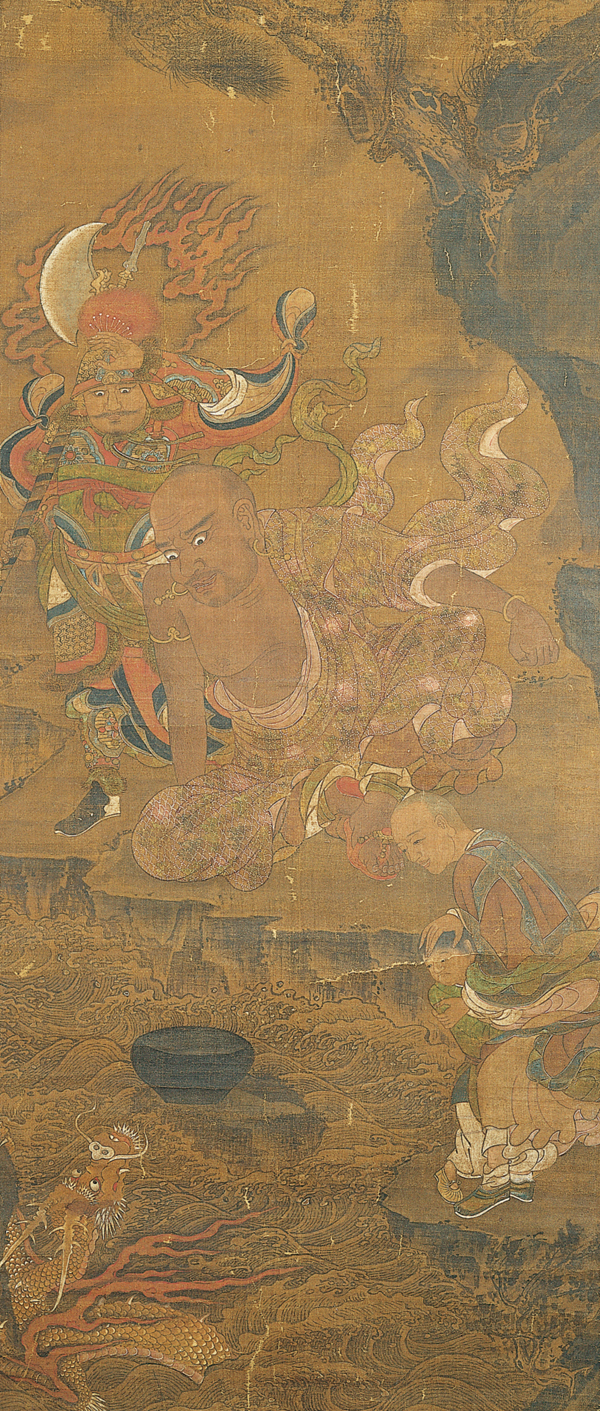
'Arhat Taming the Dragon', Early 14th century, China